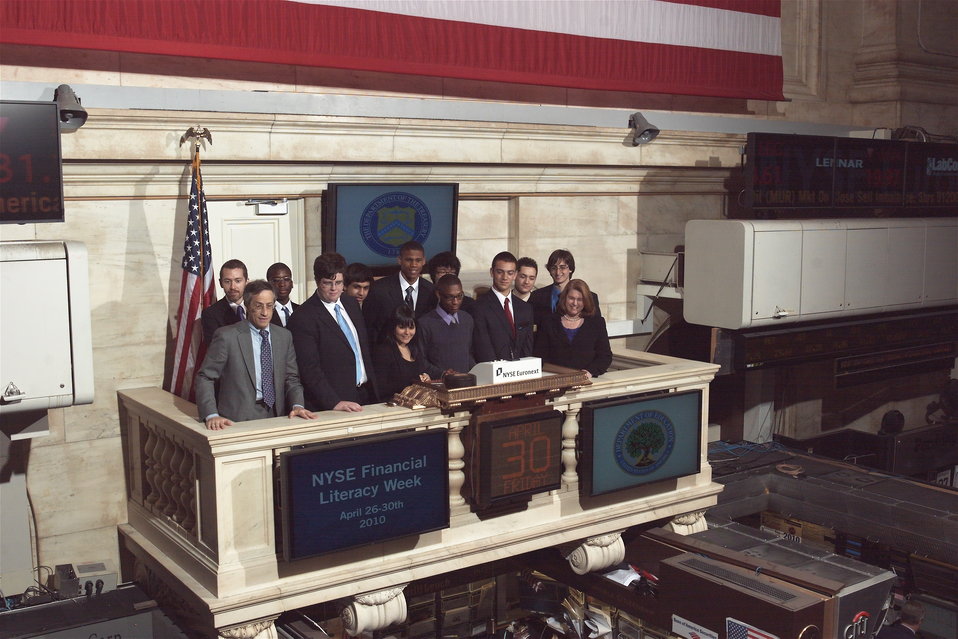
New York Stock Exchange, 4/30/2010

The visit was part of the Administration’s ongoing activity during National Financial Literacy Month and follows an event earlier this week in which Treasury Secretary Tim Geithner and Education Secretary Arne Duncan honored the outstanding achievement of many of the participating students in a recognition event at the Treasury Department.